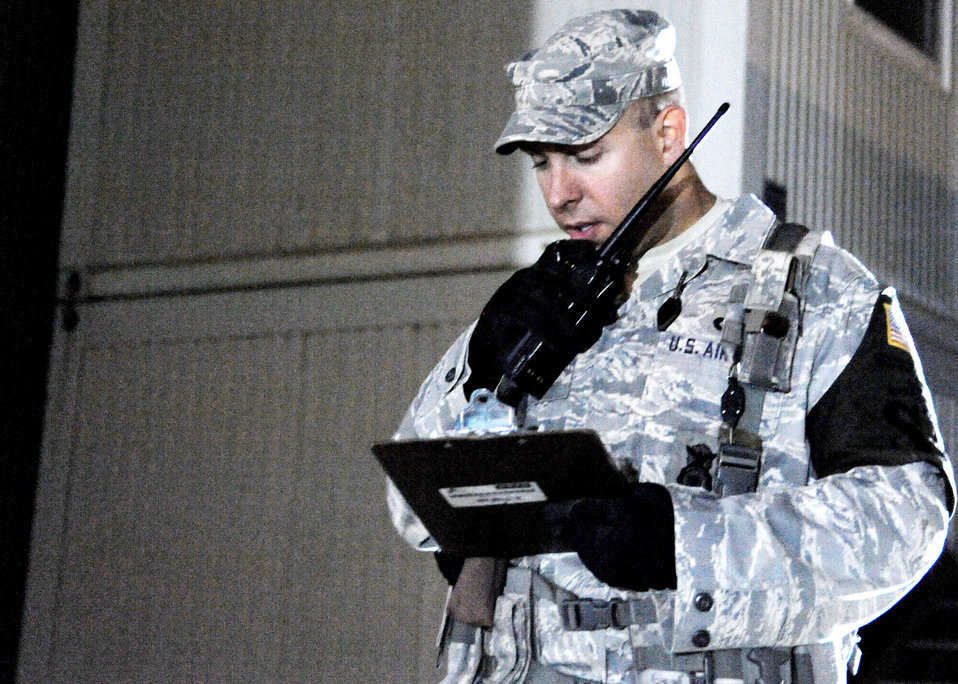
Airmen decrease base threats with random antiterrorism measures

Tech. Sgt. Thomas Williamson keeps radio contact with teams conducting a health and wellness inspection at housing units Nov. 7, 2009, at Joint Base Balad, Iraq. Security personnel conduct health and wellness inspections for a variety of reasons, even as random antiterrorism measures to check for contraband items. Sergeant Williamson is assigned to the 332nd Expeditionary Security Forces Squadron.